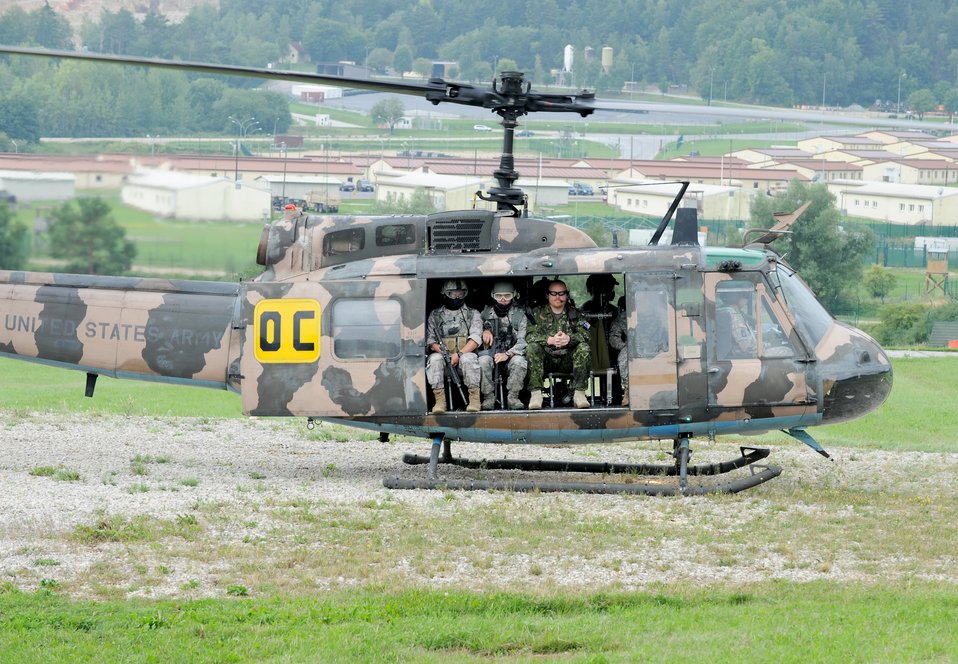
Close air support training

Air Force, Army and NATO members take off in a UH-1 Iroquois for an air assault mission scenario Aug. 3, 2010, during exercise Allied Strike 10 at Hohenfels, Germany.